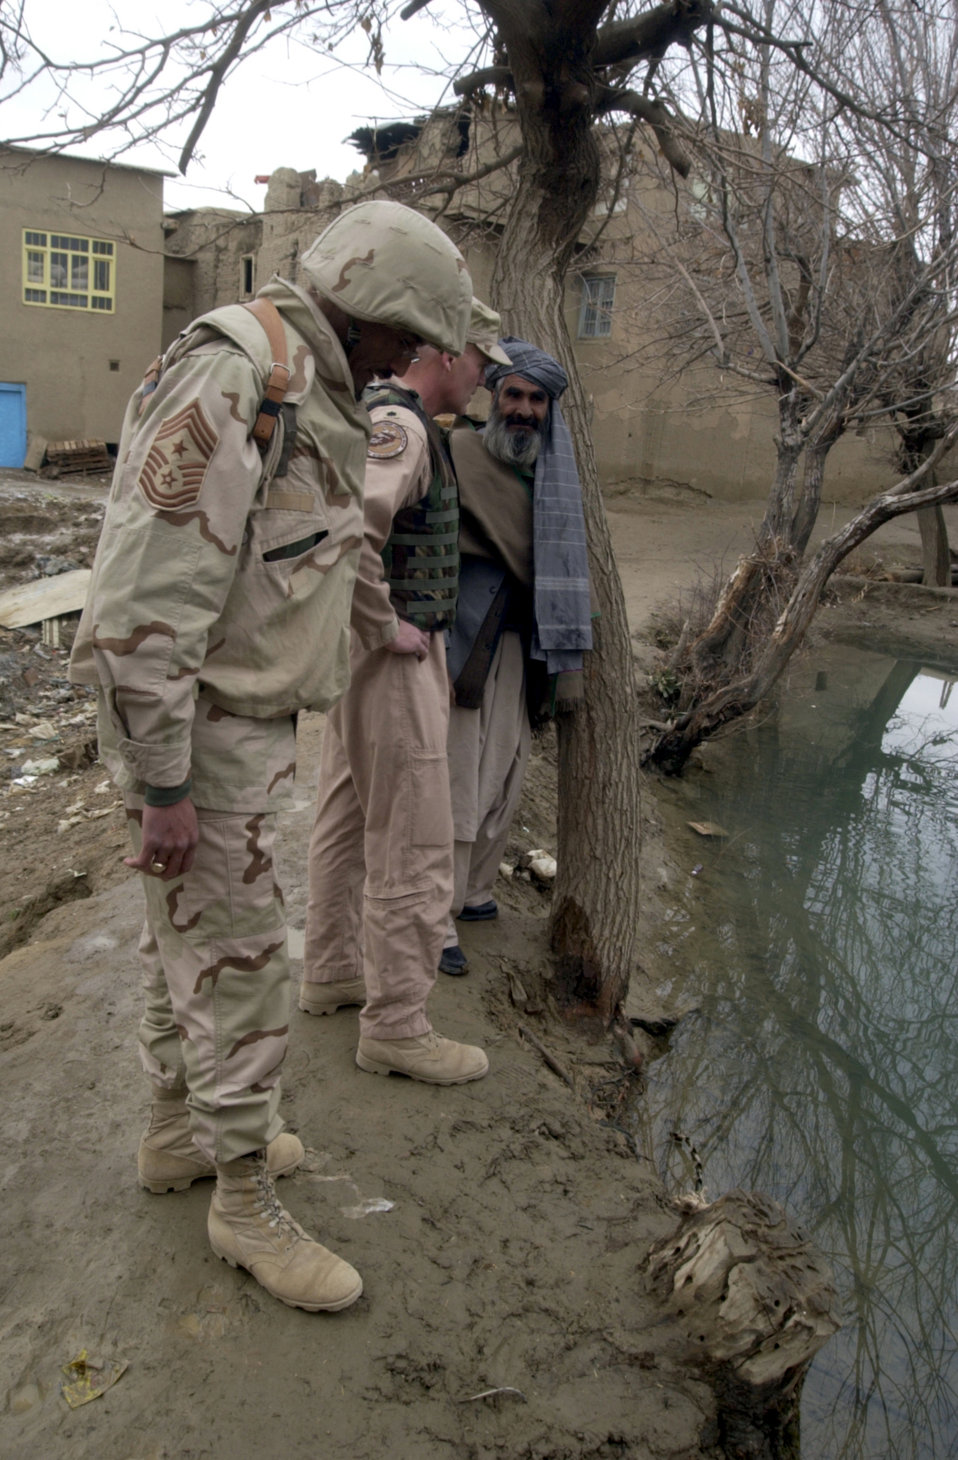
Adopt a Village

JANGADAM VILLAGE, Afghanistan -- An elder here shows Lt. Col. John Bernier and Chief Master Sgt. Timothy Sydnor the village water supply during the delivery of humanitarian supplies Dec. 31. Bernier is the 455th Air Expeditionary Wing flight safety officer, and Sydnor is the 455th AEW command chief.